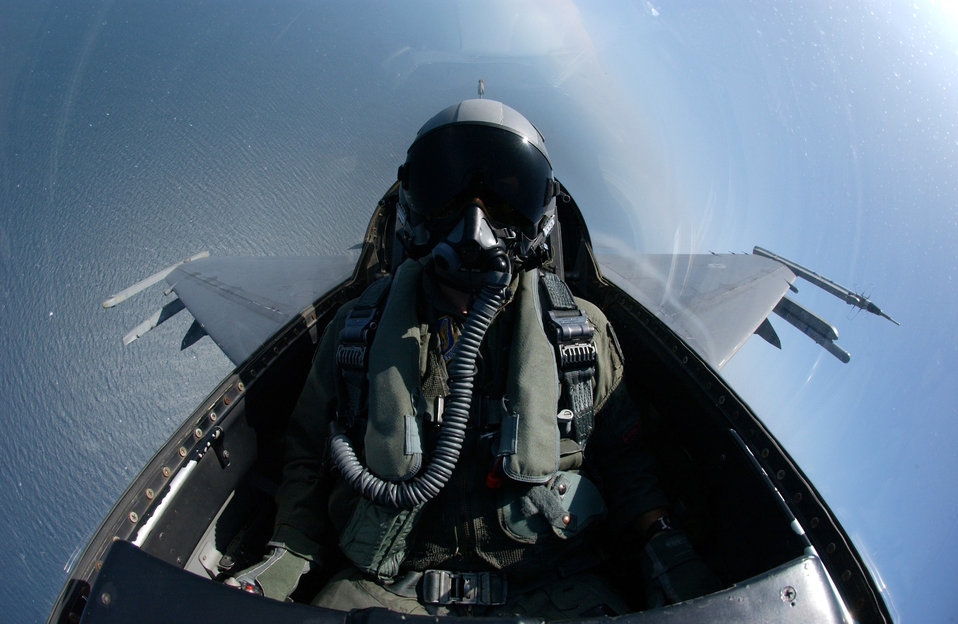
Live fire

An F-16 Fighting Falcon searches for boats off the coast of South Korea during an AIM-9 missile live-fire exercise Aug. 18. Before firing missiles, planes sweep the range area for boats. The F-16 is assigned to the 80th Fighter Squadron at Kunsan Air Base, South Korea.